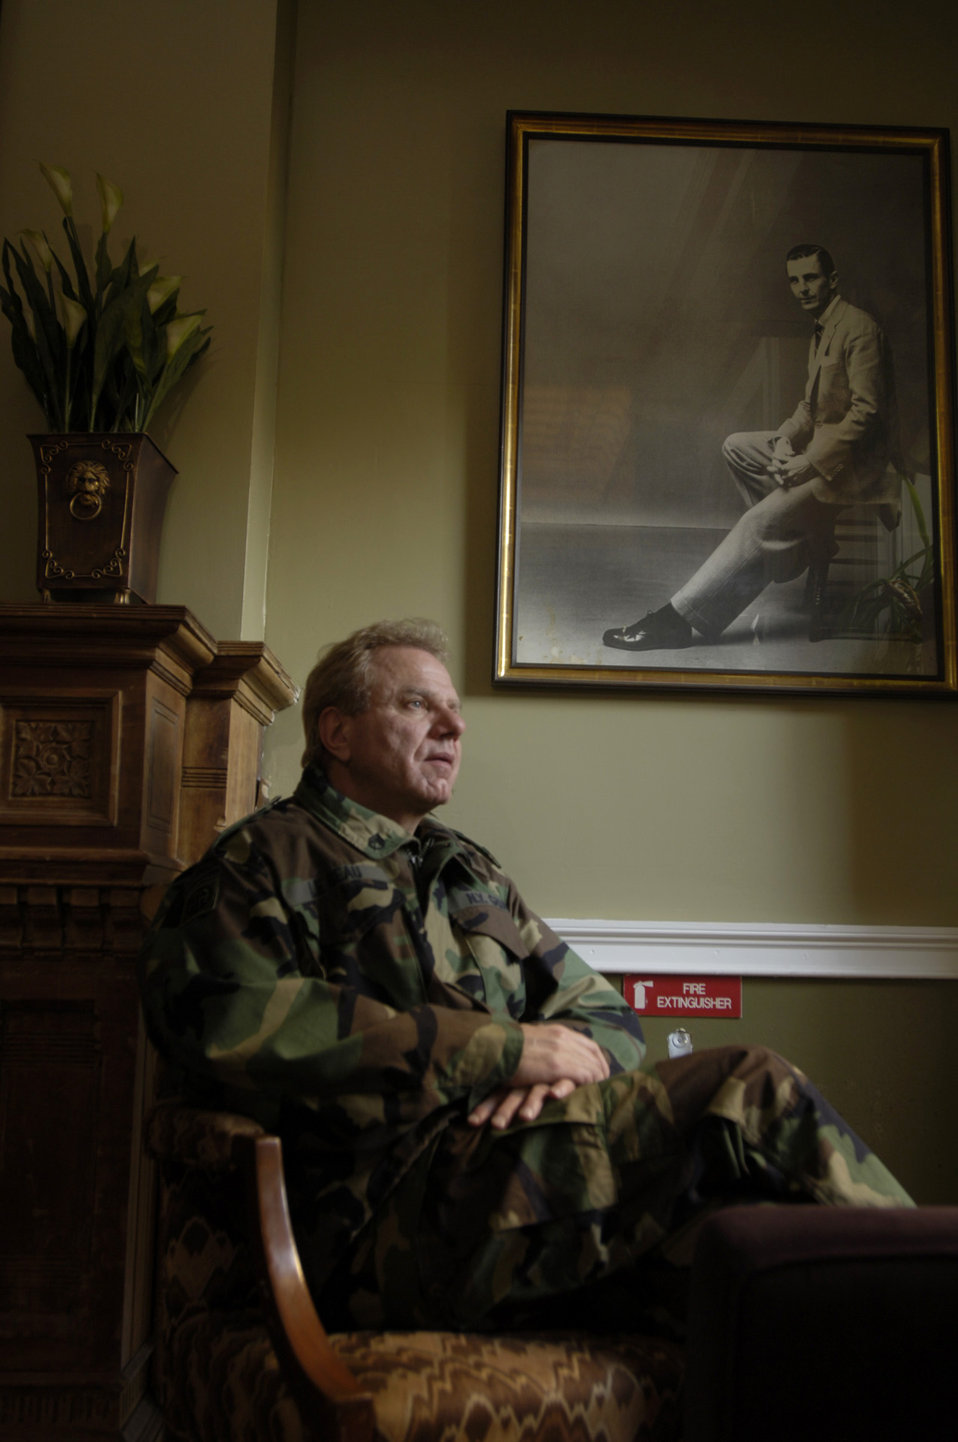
Manhattan's cheapest lodging for 'Those Who Serve'

Peter LeBeau, executive director of the Soldiers', Sailors', Marines' and Airmen's Club, has been with the club since 2004. A dated portrait of Ivan Obolensky, SSMA Club chief executive officer and chairman, hangs on the wall.